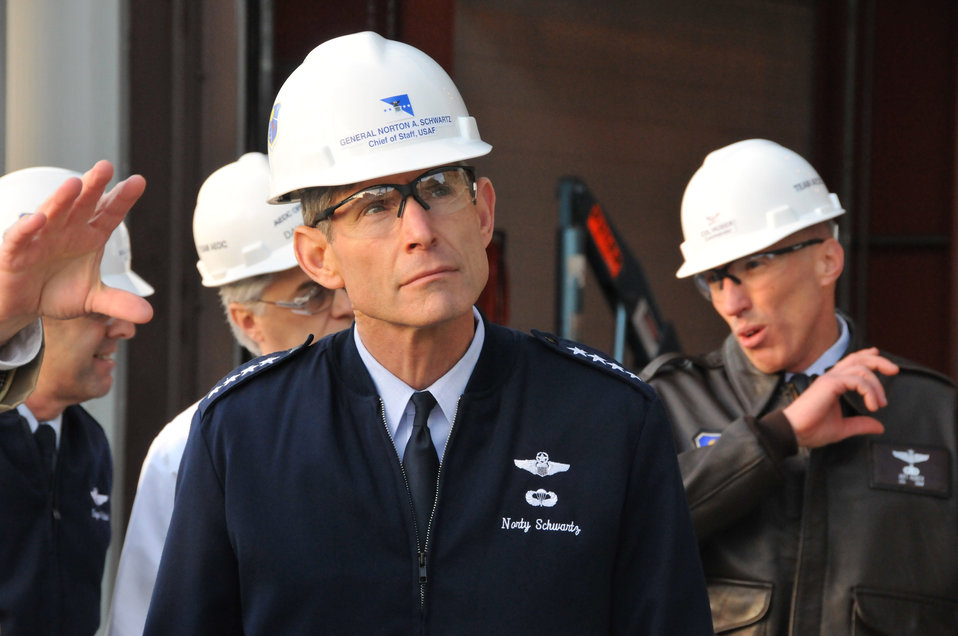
Air Force chief of staff visits Arnold

Chief of Staff of the Air Force Gen. Norton Schwartz tours Arnold Engineering Development Center Nov. 17 at Arnold Air Force Base, Tenn.